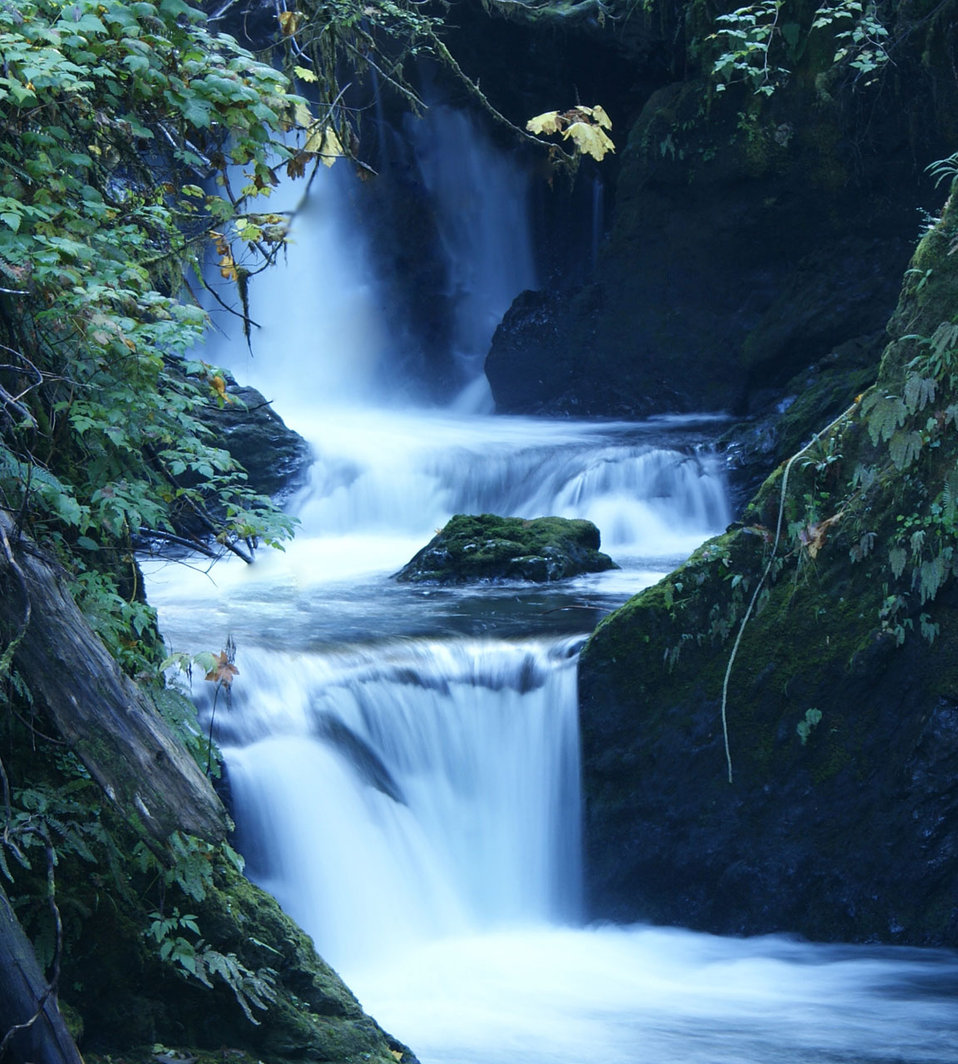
Quinault waterfall

Waterfall in quinalt near olympic national park..